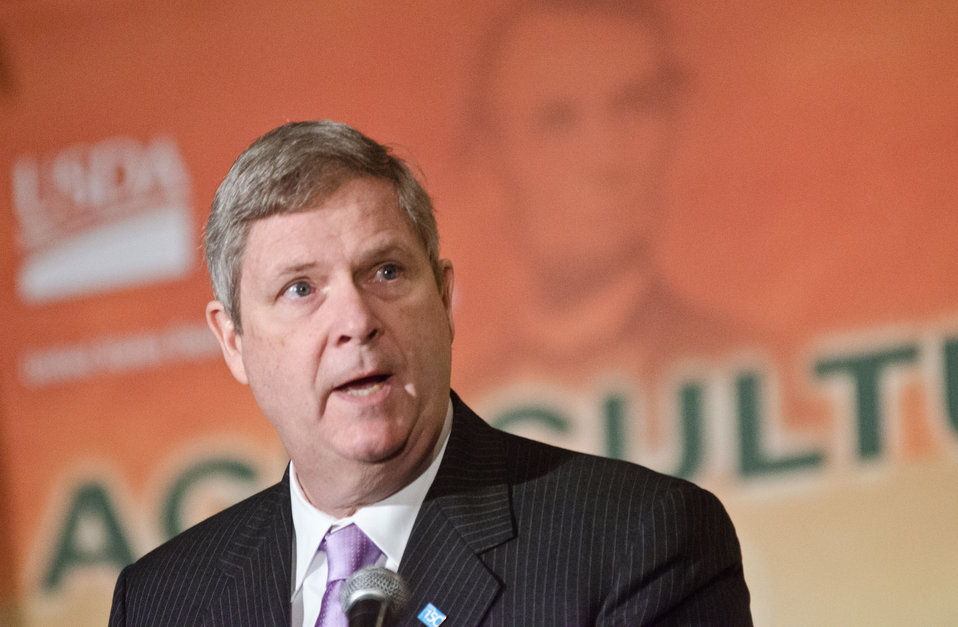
Agriculture Secretary Tom Vilsack makes remarks at the 2012 Agricultural Outlook Forum, “Moving Agriculture Forward” in Arlington, VA. On Thursday, February 23, 2012.